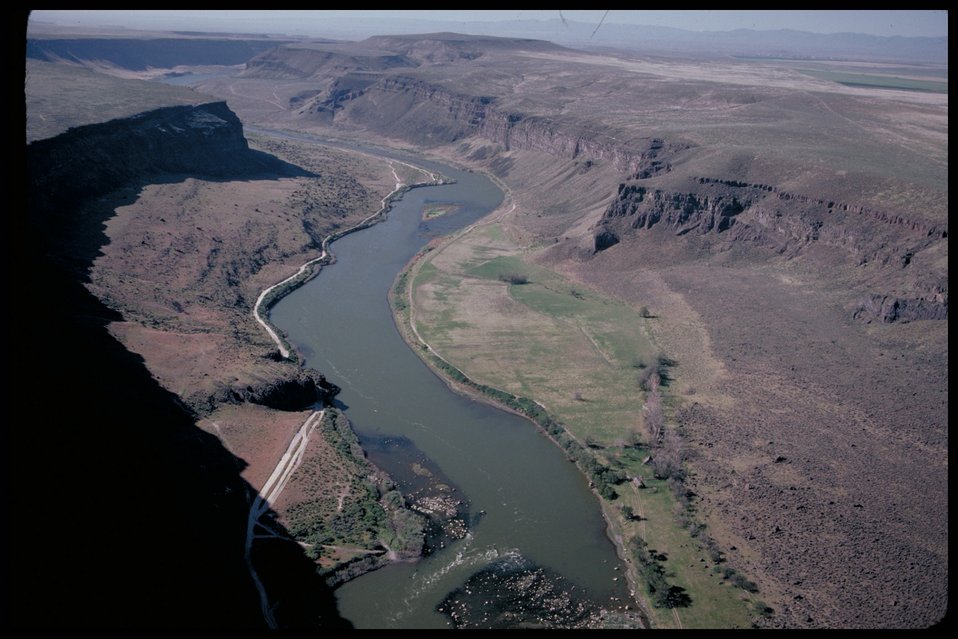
Birds of Prey National Conservation Area BOP Owyhee Field Office LSRD Lower Snake River District